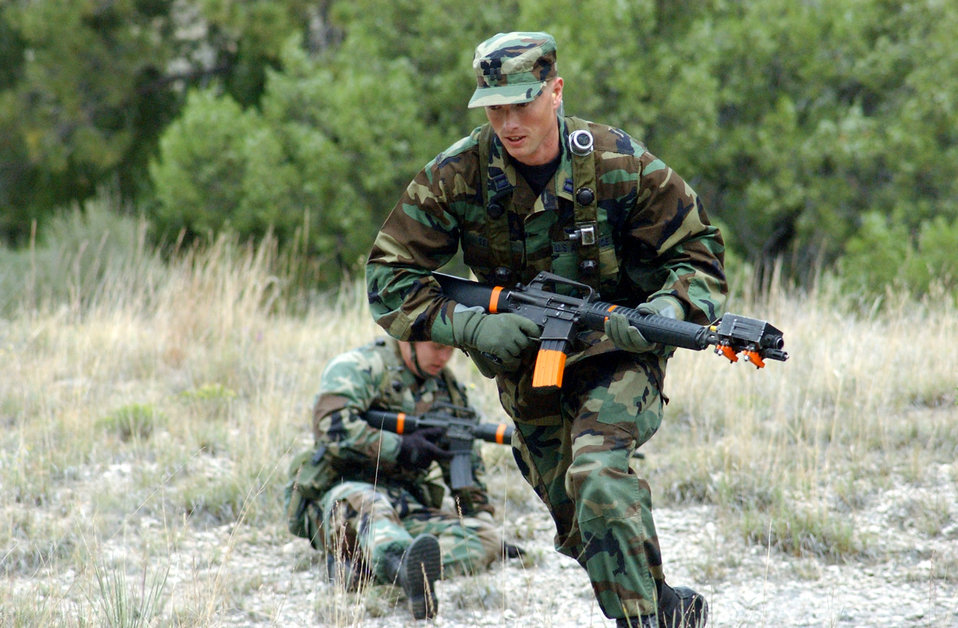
Road Warrior III reinforces continuous training

CAMP GUERNSEY, Wyo. -- Capt. Karl Seekamp runs to provide fire during the Road Warrior III exercise here. He is a pilot with the 37th Helicopter Flight at F.E. Warren Air Force Base, Wyo.